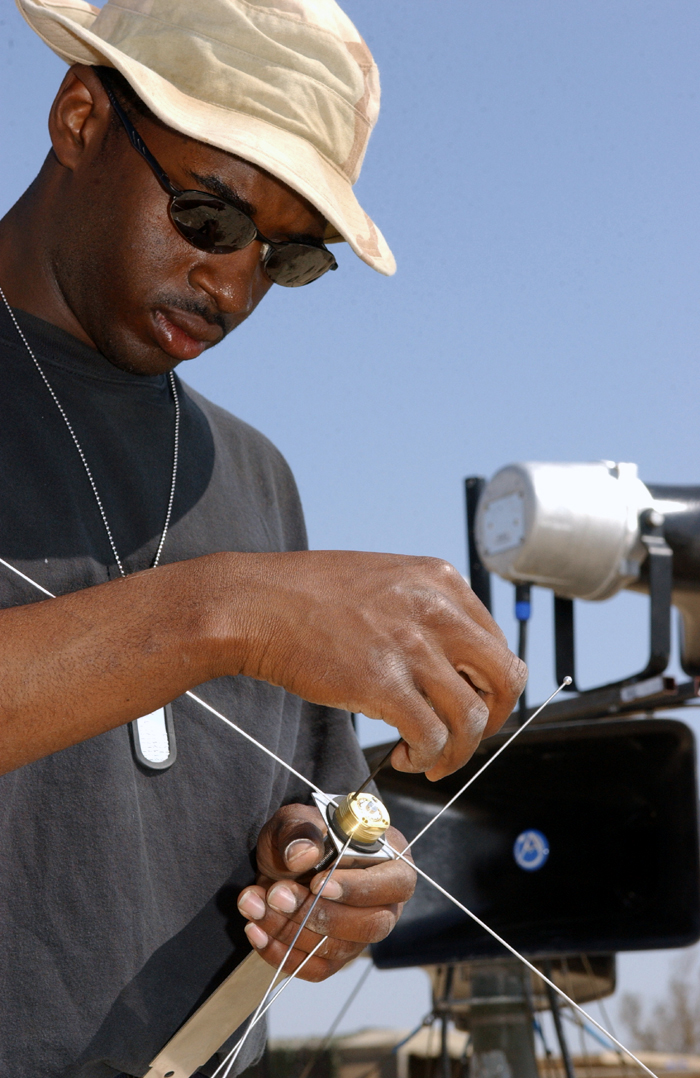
Radio receiver

OPERATION IRAQI FREEDOM -- Senior Airman Nicholas Hendersen assembles the radio receiver antenna on a